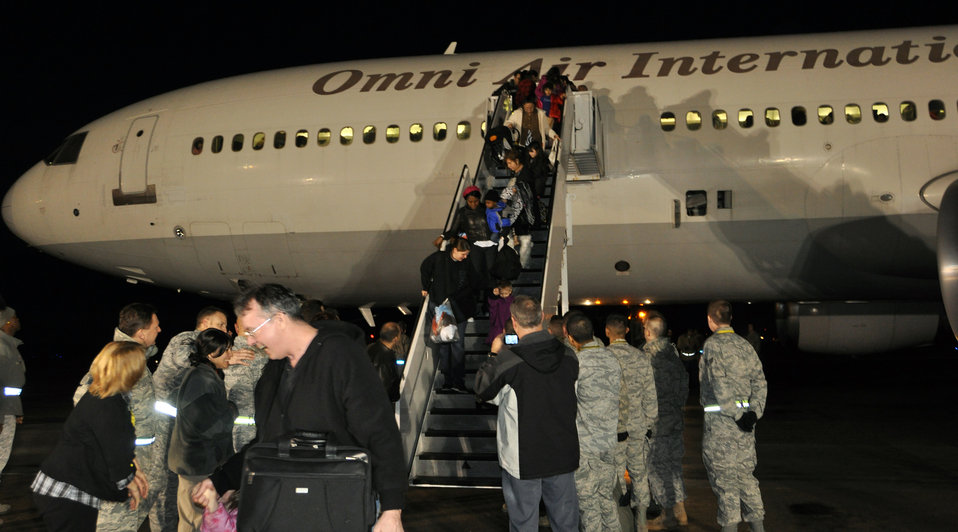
Members voluntarily leave Japan in support of Operation Pacific Passage

Passengers of a DC-10 military-chartered flight arriving from Japan de-board March 22, 2011, at Travis Air Force Base, Calif. Service members, family members and civil service employees voluntarily left Japan in efforts to assist and expedite recovery efforts in the country by reducing the demand for food, water, fuel and electricity during this national emergency while hundreds of thousands of Japanese citizens remain displaced.